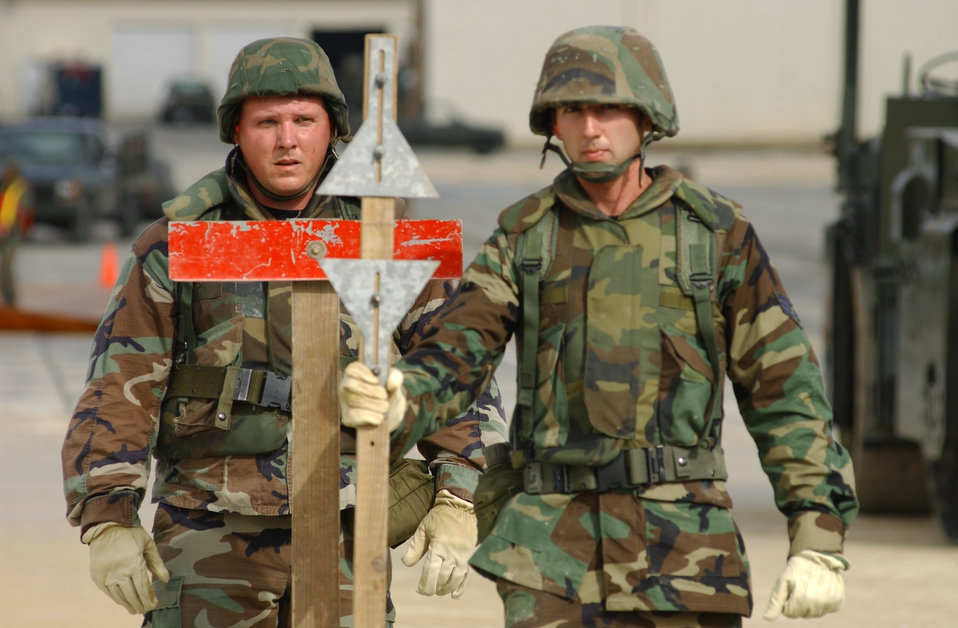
Rapid repair

KADENA AIR BASE, Japan -- Staff Sgt. Michael Farley (left) and Senior Airman Brent Miller checks for runway damage during the recent Pacific Command Airfield Damage Repair Commander's Cup competition. The Airmen are assigned to the 18th Civil Engineer Squadron here.